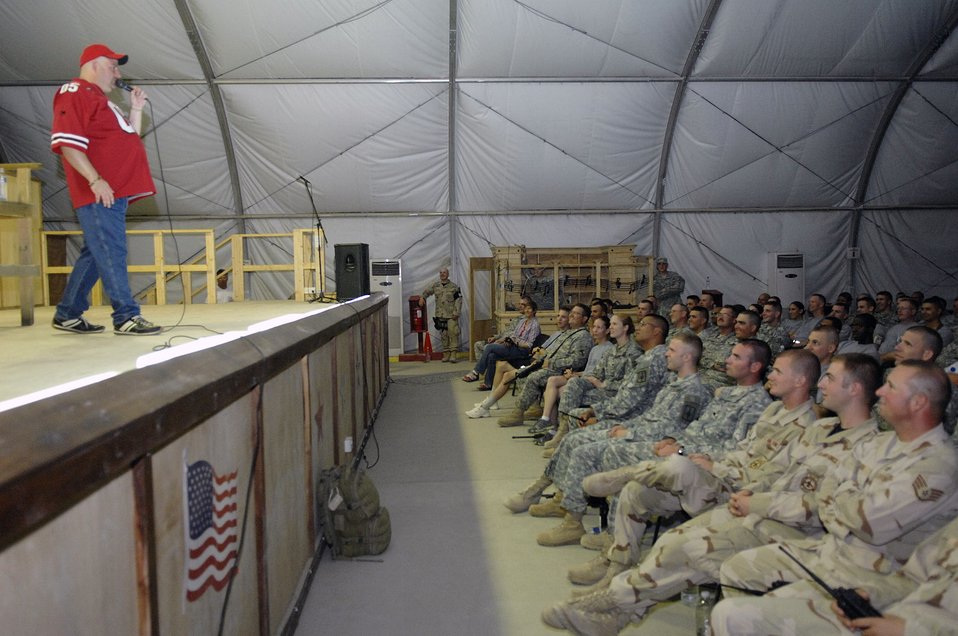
USO-sponsored show keeps 'em laughing

Scott Kennedy performs his comedy routine for more than 700 Airmen and Soldiers at a USO show July 25 at Camp Adder, Iraq. This is Mr. Kennedy's fifth USO tour in the region. He is touring with Dave Attell of Comedy Central's